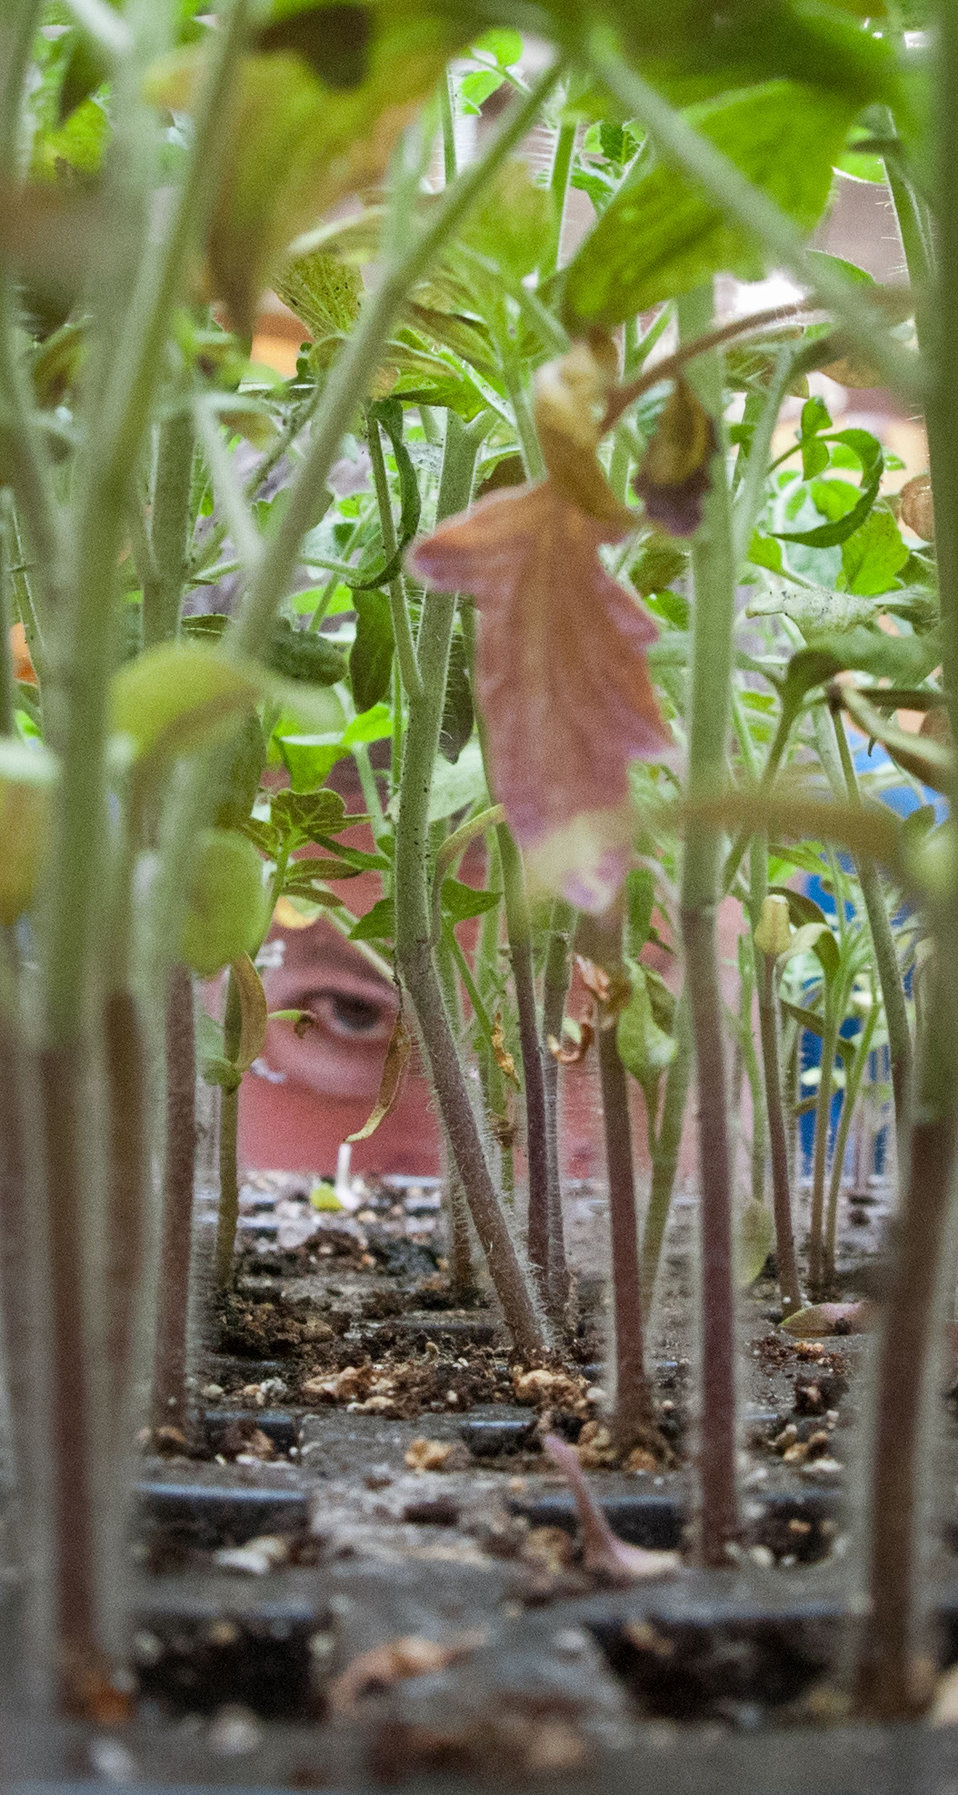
Agriculture's Farm Service Agency volunteer Executive Master Gardener Martin Bomar, keeps an eye on ‘Abraham Lincoln” Tomato seedlings that the People’s Garden Initiative is distributing to USDA employees in celebration of the 150th Anniversary of the U.S. Department of Agriculture, on Tuesday, May 15, 2012 in Washington, D.C., on this day, 150 years ago, President Abraham signed the Department into existence during the Civil War. In 1923 the H.W. Buckbee seed company of Rockford, Illinois introduced an heirloom variety named in honor of Illinois’ Greatest Son – Abraham Lincoln. The plant produces large beefsteak tomatoes in about 90 days. Volunteer Executive Master Gardeners planted and cultivated more that 3,000 seedlings ranging in size from one inch to more than a foot tall, so people could choose the best ones to transport home and to stagger the harvest by selecting a small and large seedling. One of the hopes of this event is to share the joys of gardening and harvesting, as well as the opportunity to share your harvest in your community. Seed packets are being distributed to People’s Gardens worldwide.